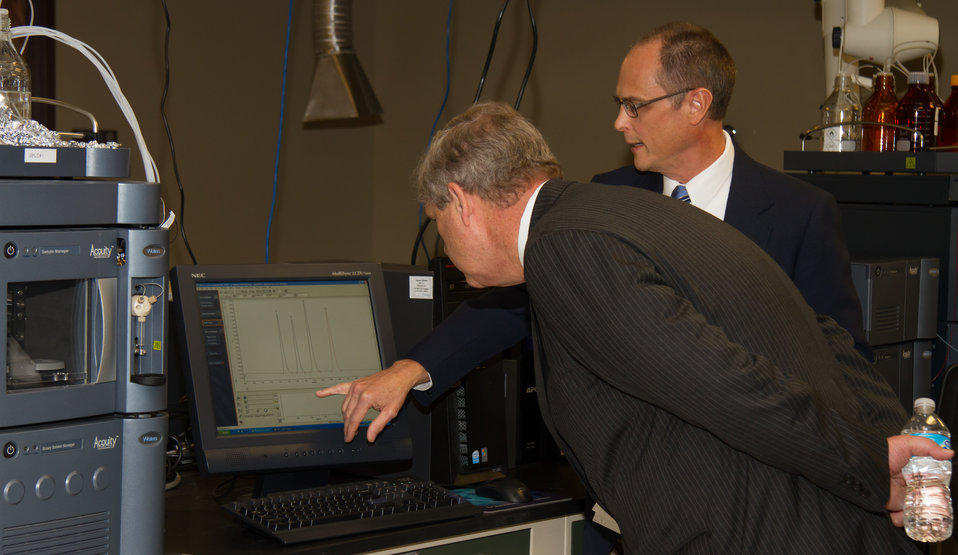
Dr. Tim Norden, (r), Chief of Grain Inspection, Packers and Stockyards Administration (GIPSA) Analytical Chemistry Branch, shows Agriculture Secretary Tom Vilsack the results of analysis of a grain sample for four types of aflatoxins using High Performance Liquid Chromatography in Kansas City, MO, on Wednesday, Oct. 23, 2013.